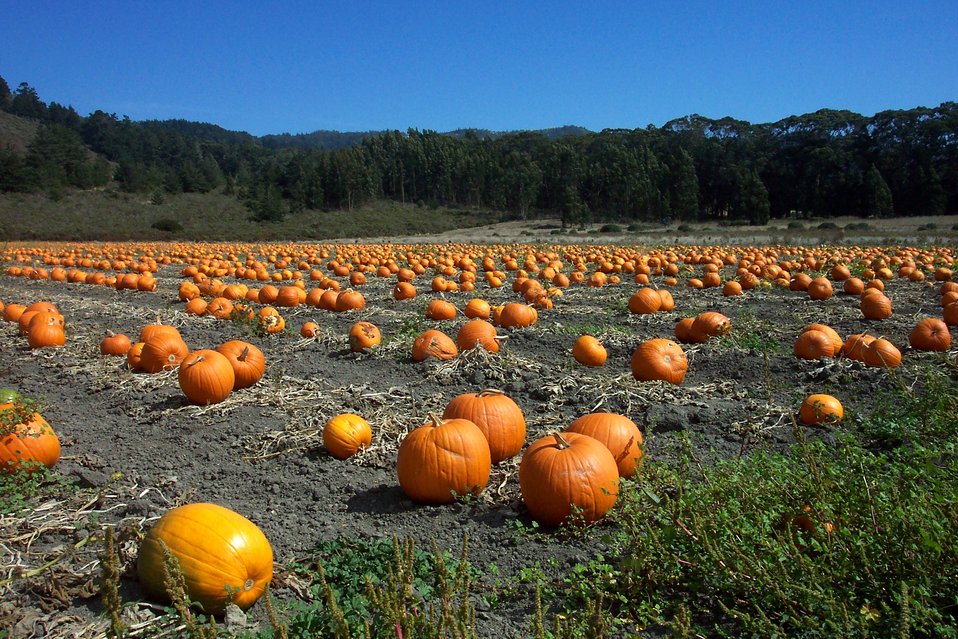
A pumpkin patch along Highway 1 north of Davenport.